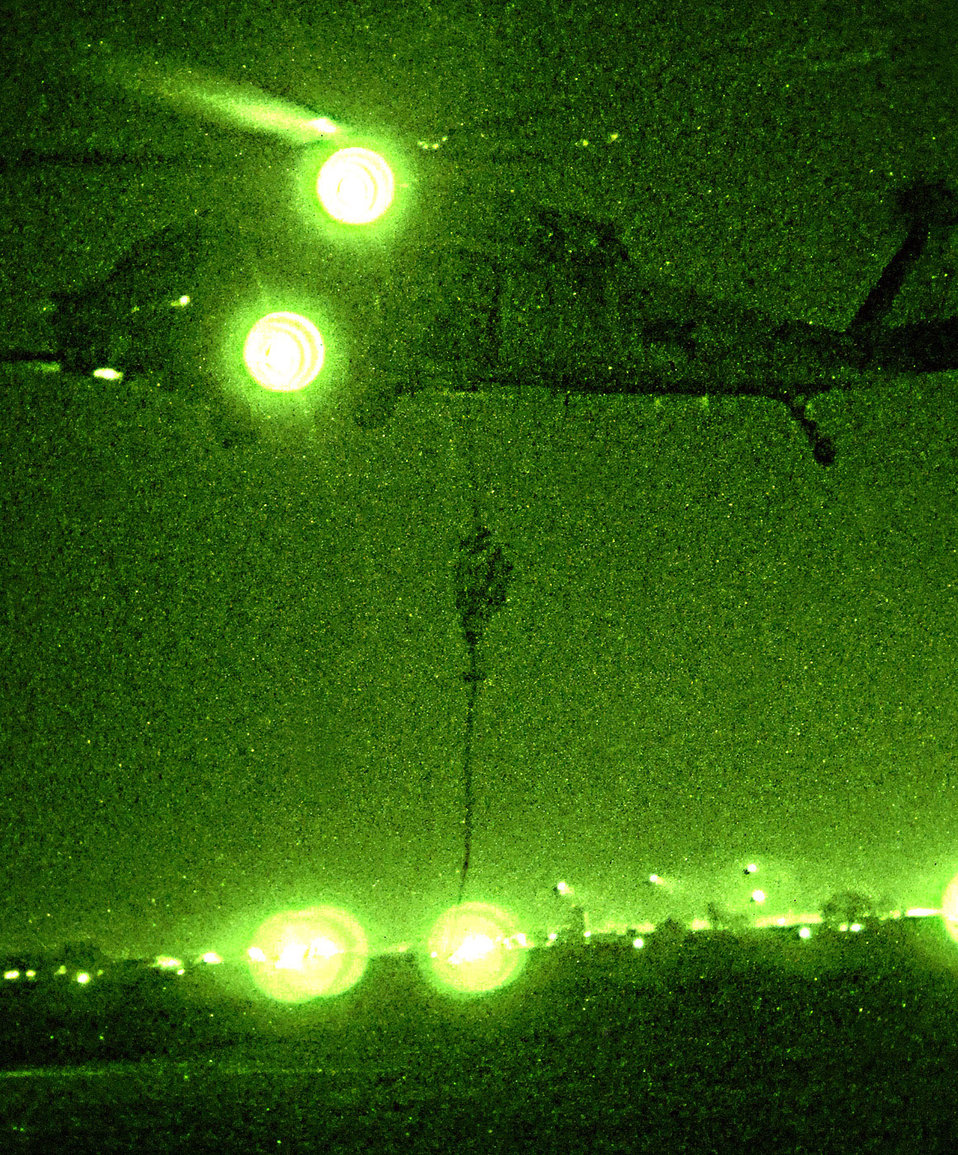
Pararescue Airmen mission ready for search, rescue

A pararescue jumper, using night vision goggles, repels from an HH-60 Pave Hawk during a combat search and rescue rehearsal mission Feb. 24 outside Balad Air Base, Iraq. Pararescue jumpers use these invaluable rehearsal missions to stay proficient. The PJ is assigned to the 64th Expeditionary Rescue Squadron.